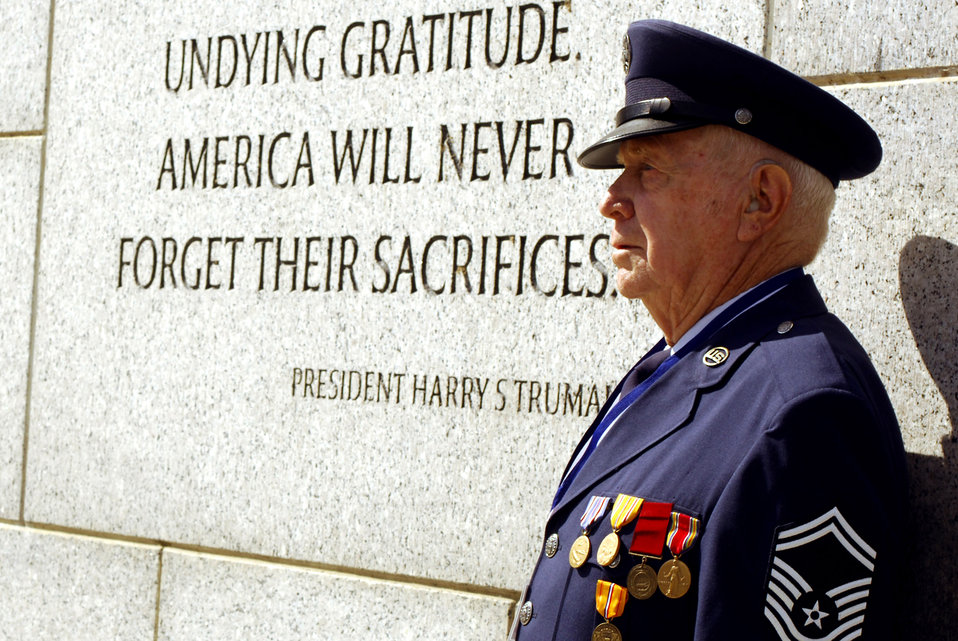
Standing proud

Retired Senior Master Sgt. Billy Neil stands at the National World War II Memorial in Washington, D.C., Sept. 15 during Hero Flight 2007, a program where volunteers set up trips for as many WWII veterans as possible to visit the memorial at no cost.